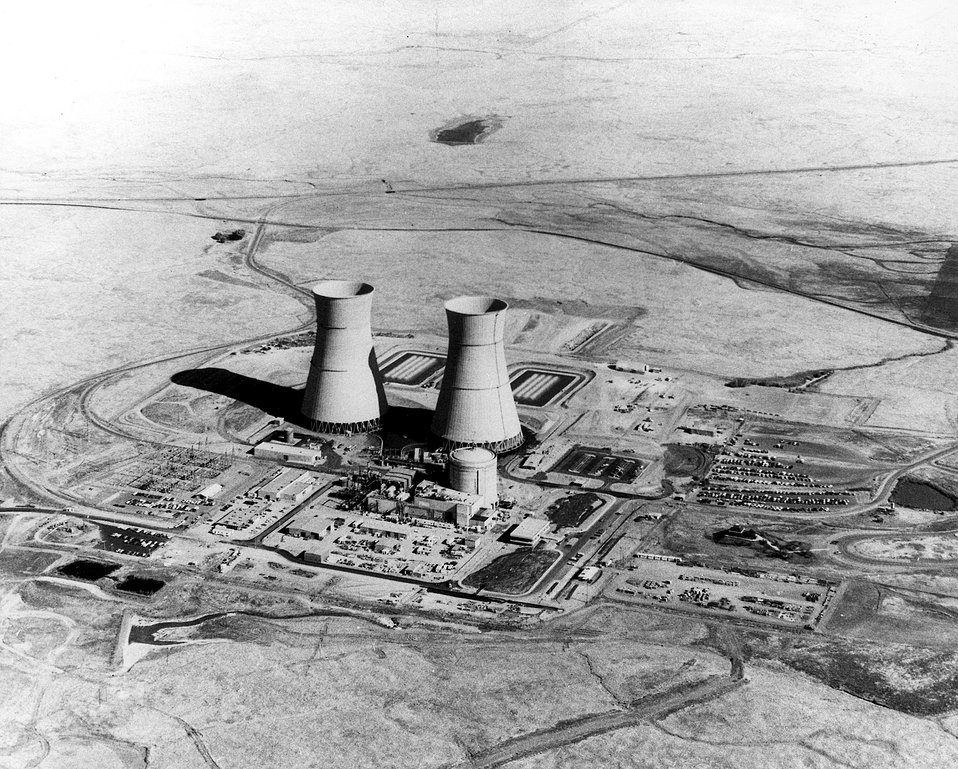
Rancho Seco Nuclear Generating Station Unit 1 near Clay Station, California. The Sacramento Municipal Utility District's generating station employs a Babcock & Wilcox pressurized water reactor and will generate 913,000 Kw electric. Circa 1974.